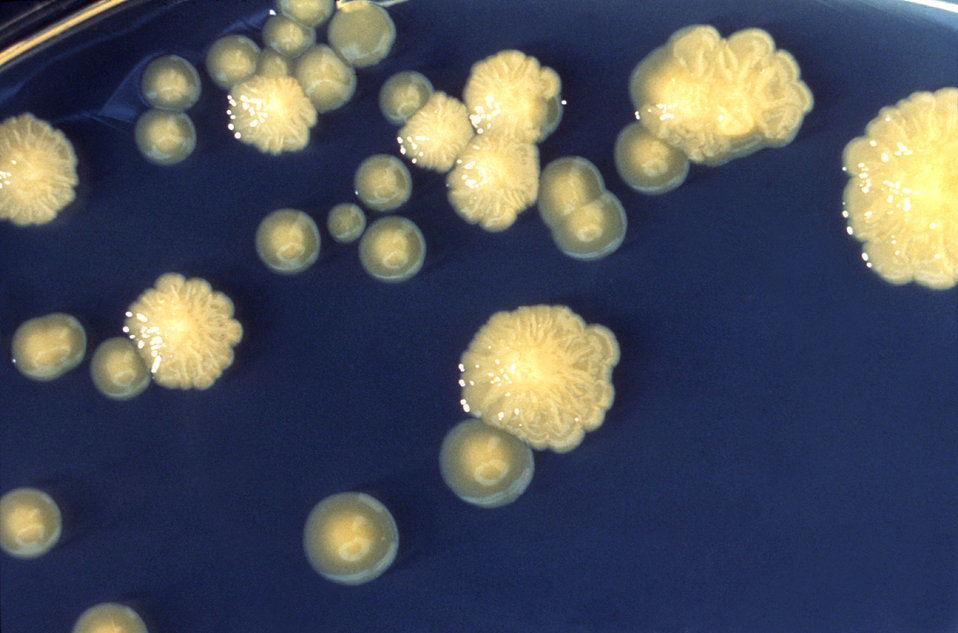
This agar culture plate grew colonies of Enterobacter cloacae that were both characteristically rough and smooth in appearance.